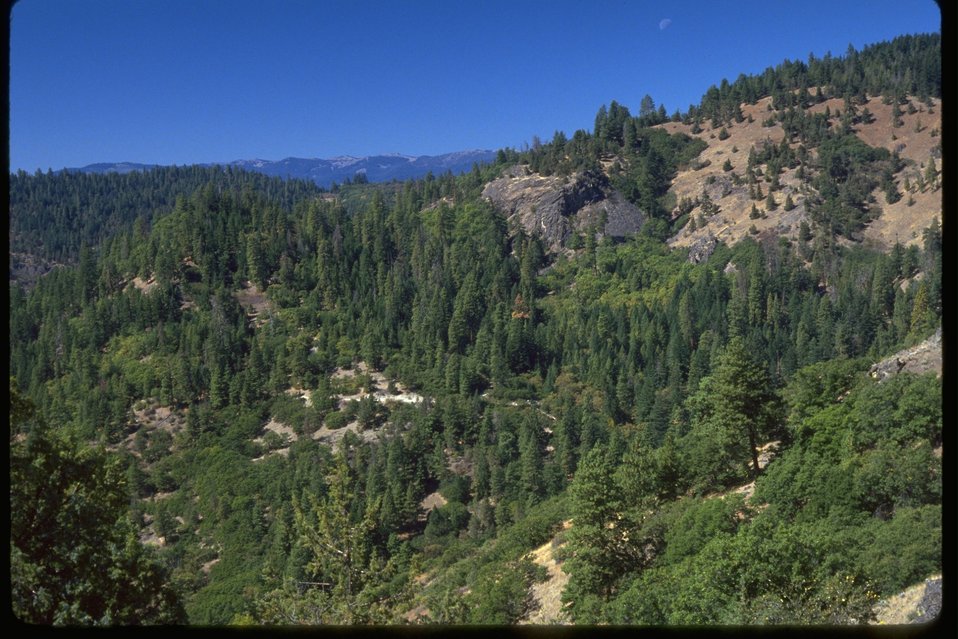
West Hutton Creek.